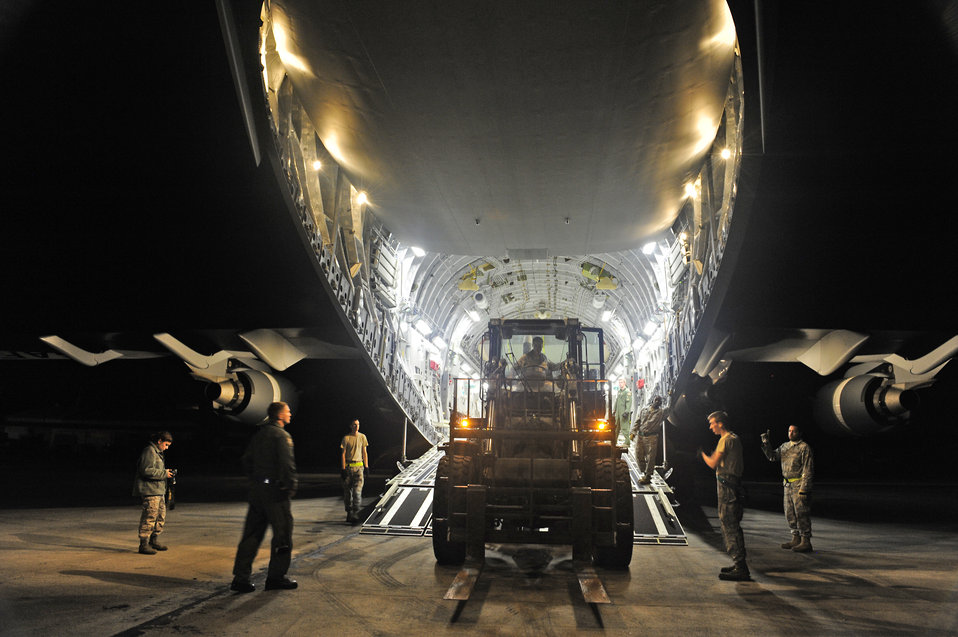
Haiti Earthquake Relief

Airmen offload cargo from a C-17 Globemaster III aircraft from Charleston Air Force Base, S.C., Jan. 15, 2010, at the Port-au-Prince airport in Haiti in support of relief efforts in the aftermath of a devastating earthquake. The Airmen are assigned to the 621st Contingency Response Wing at Joint Base McGuire-Dix-Lakehurst, N.J.